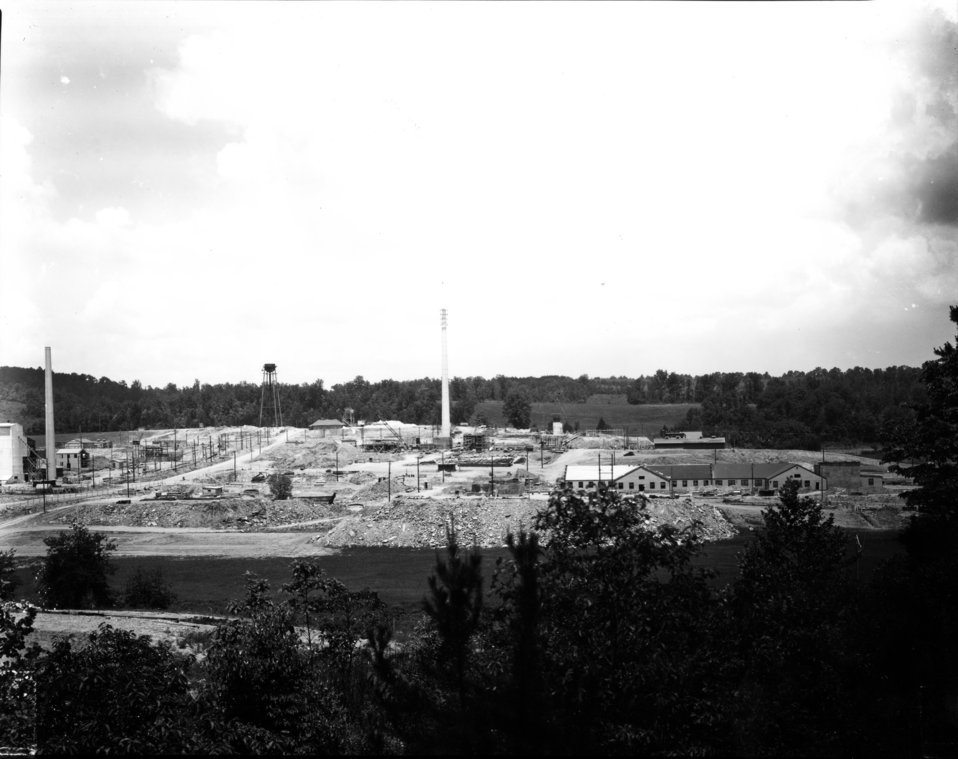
X-10 at Oak Ridge